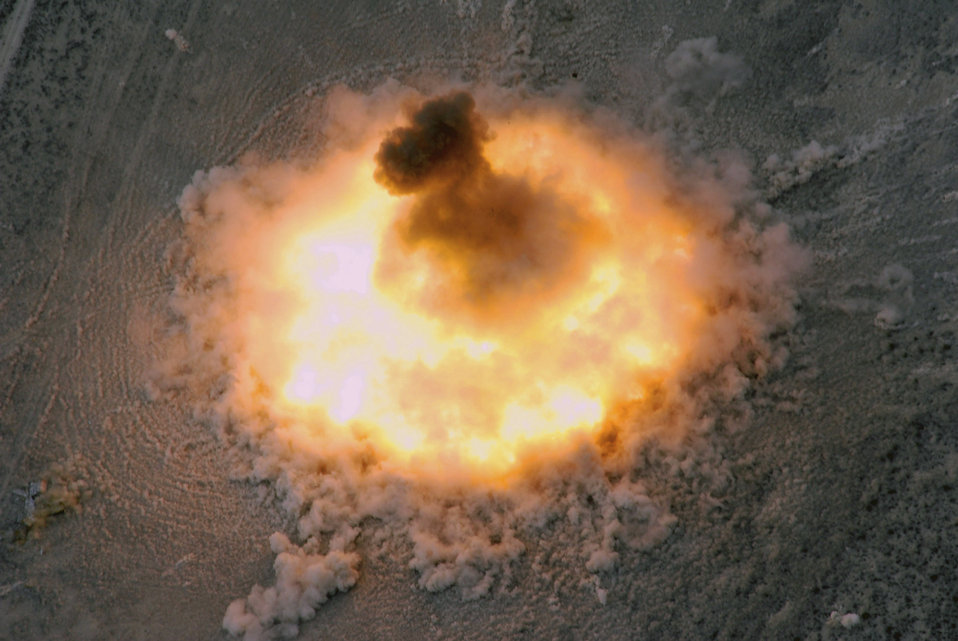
Duke Field Airmen drop 15,000-pound bomb

The last 15,000-pound Bomb Live Unit-82 donates after being dropped from an MC-130E Combat Talon I from the 919th Special Operations Wing from Duke Field, Fla., July 15 at the Utah Test and Training Range.